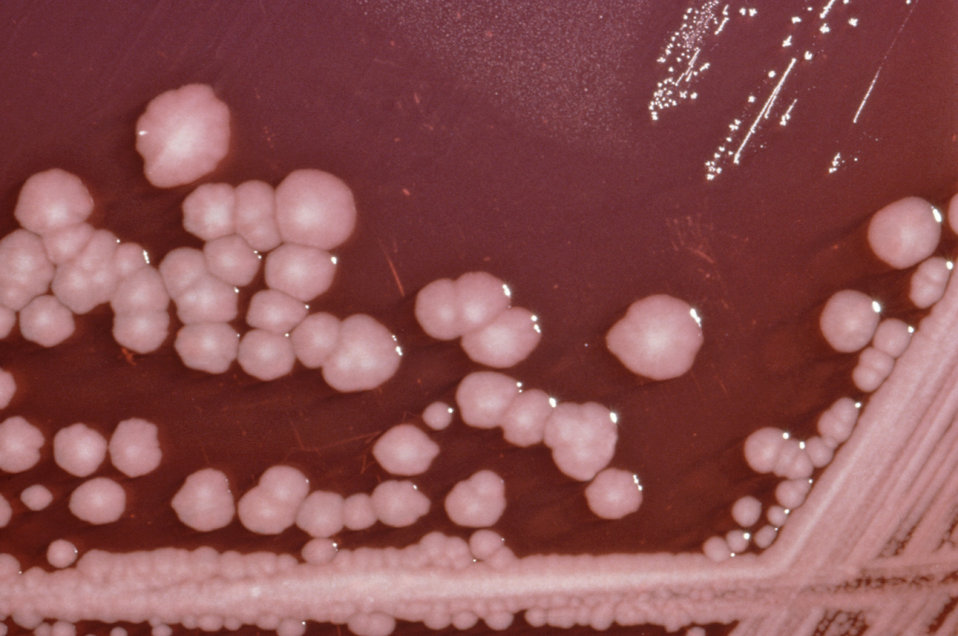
This photograph depicts the colonies of Proteus mirabilis bacteria grown on a Xylose Lysine Sodium Deoxycholate (XLD) agar plate.